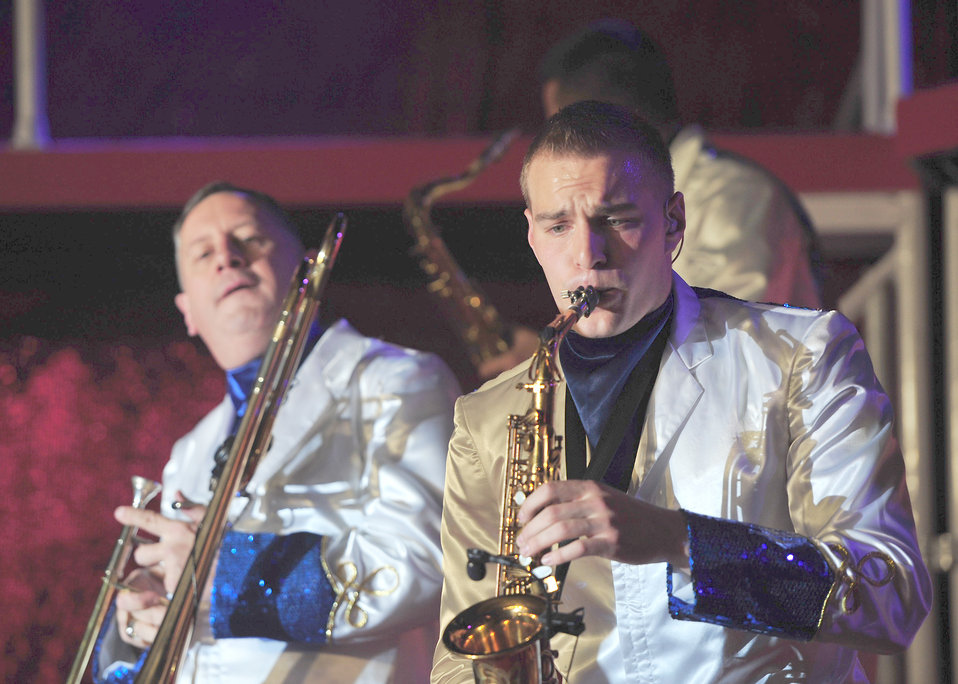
Tops in Blue ‘wows’ audience with their Talent

Senior Master Sgt. Clayton Johnson, Tops in Blue superintendant and Trombone player, and Airman 1st Class Ryan Ratkowski, Tops in Blue saxophone player perform at the 2011 tour “Rhythm Nation” providing a glimpse of a century of popular music and how it grew through new rhythms and technology.